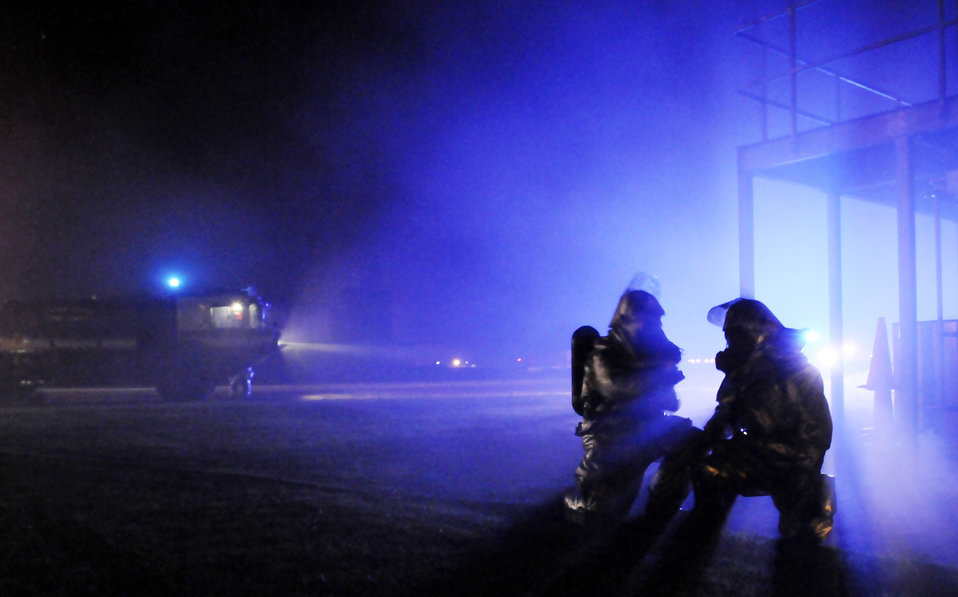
Working the night shift

Two firefighters lean in close to shout out the plan of attack during a simulated building fire July 23 at Royal Air Force Mildenhall, England. The fire is one part of several days of training scenarios taking place during an operational readiness exercise. The firefighters are assigned to the 100th Civil Engineer Squadron.